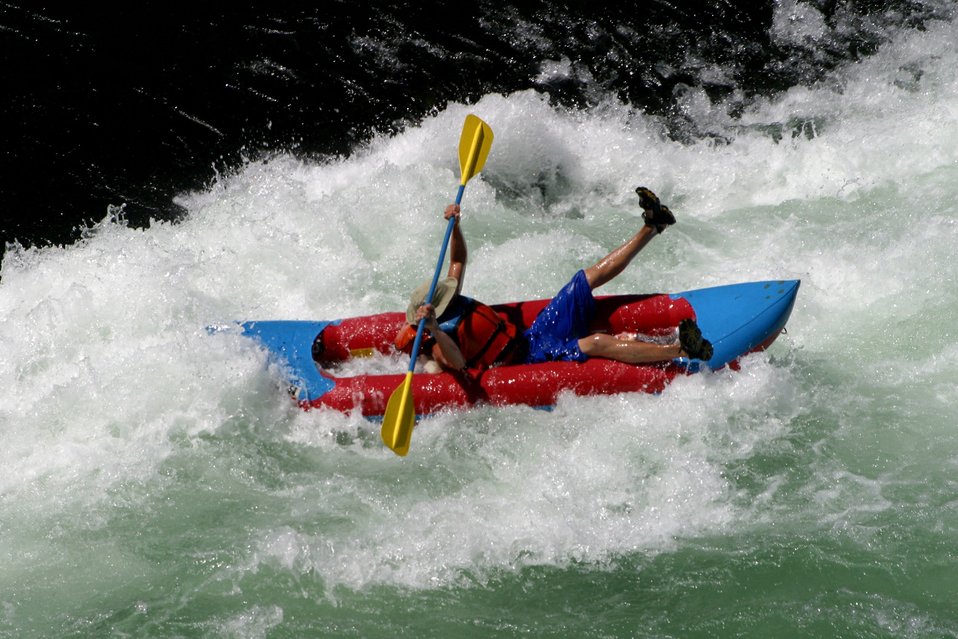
Oak Springs is a Class IV Rapids. The left channel has shallow rocks, large standing waves, turbulent currents and a large hole during high flows. The right channel has a large hole, shallow rocks, and turbulent currents. 7/26/03 Pelton Dam 3600 cfs: Moody Rapids 4300 cfs.